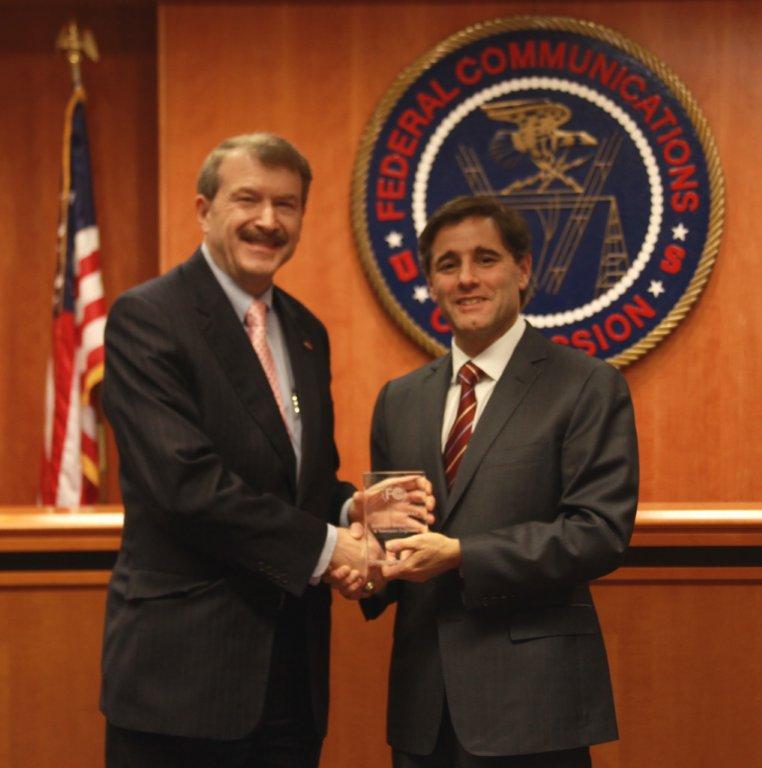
Robert Seidel, SMPTE, Accepts Video Programming Award

Robert Seidel, accepts Video Programming Award from Chairman Genachowksi for the Society of Motion Picture and Television Engineers (SMPTE).